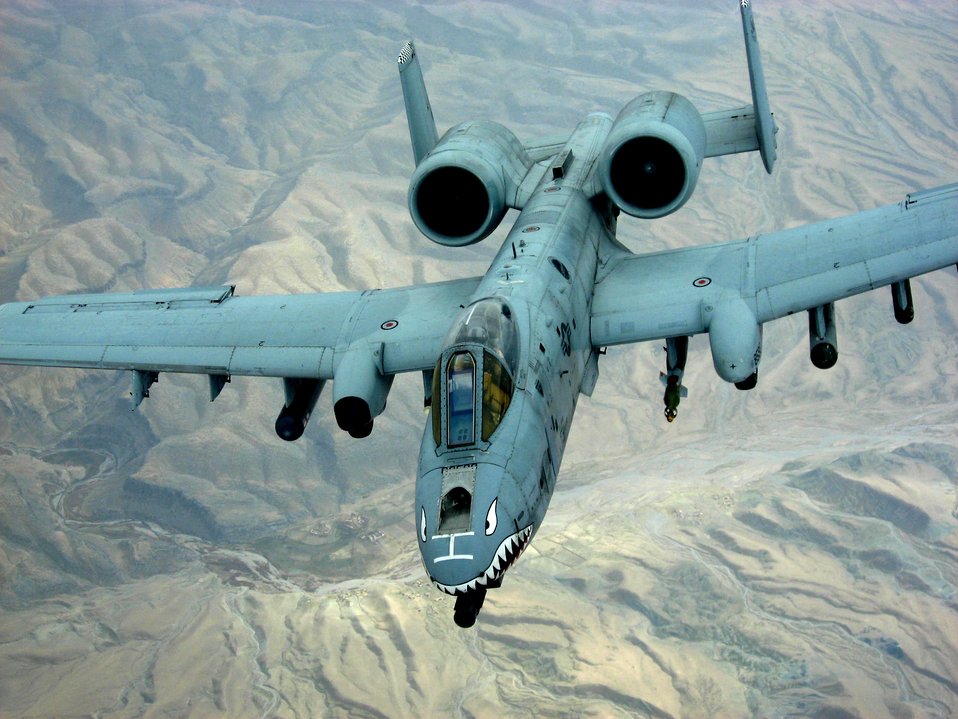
Gas and go

An A-10 Thunderbolt II pulls away after receiving fuel from a KC-10 Extender flying over Afghanistan Dec. 14. The tanker is from the 380th Air Expeditionary Wing, home of the largest air refueling wing in Southwest Asia. Unit aircrews fly KC-10s and KC-135 Stratotankers in support of wartime operations.